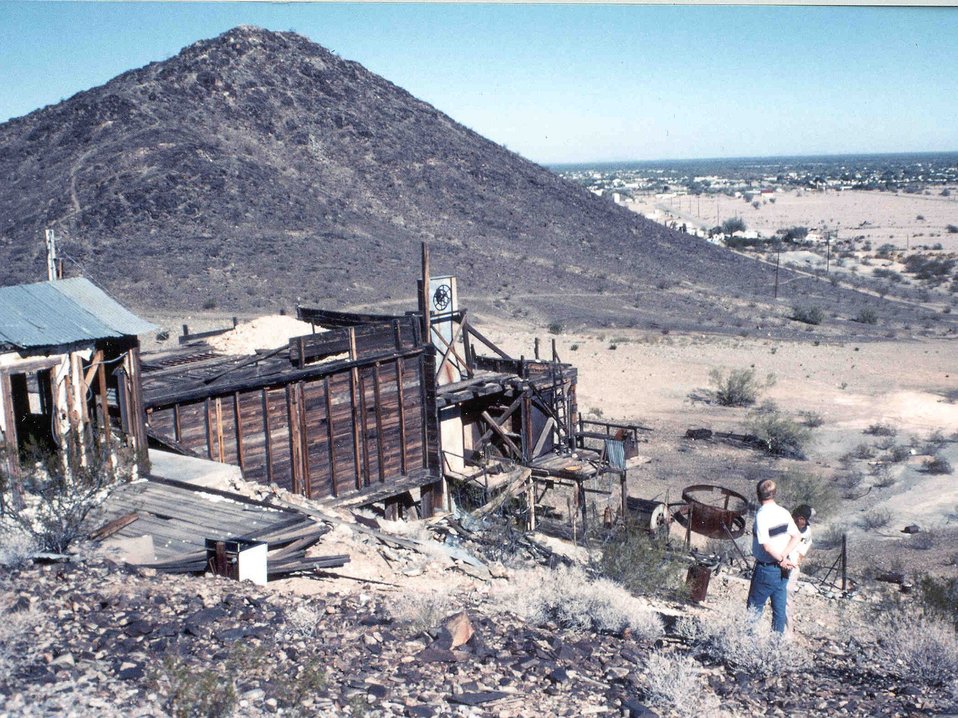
An old abandoned mine in the Quartzsite area.